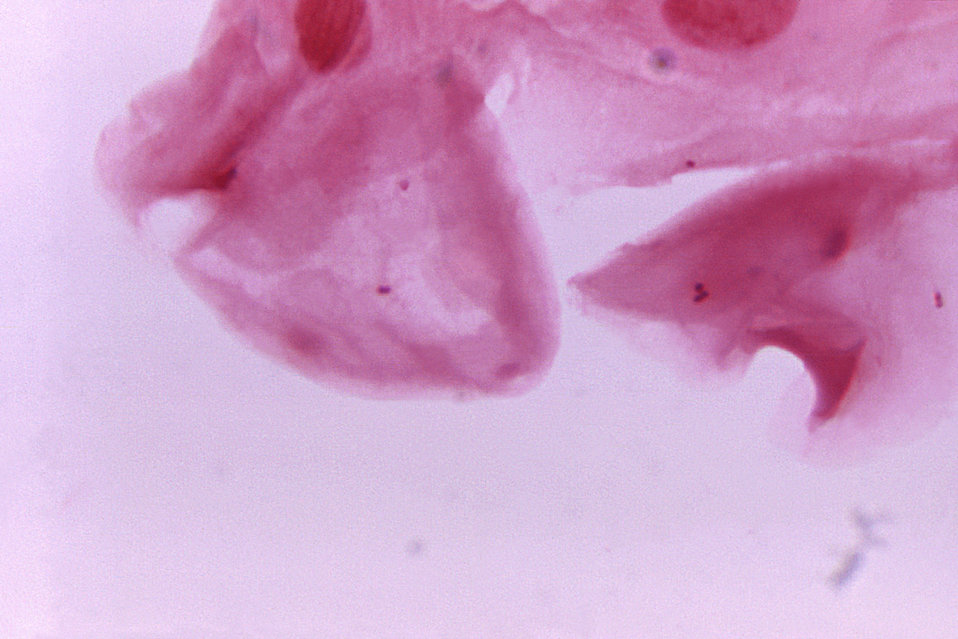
This photomicrograph of a urethral exudate specimen, contains gram-negative diplococci; Magnified 1125X.